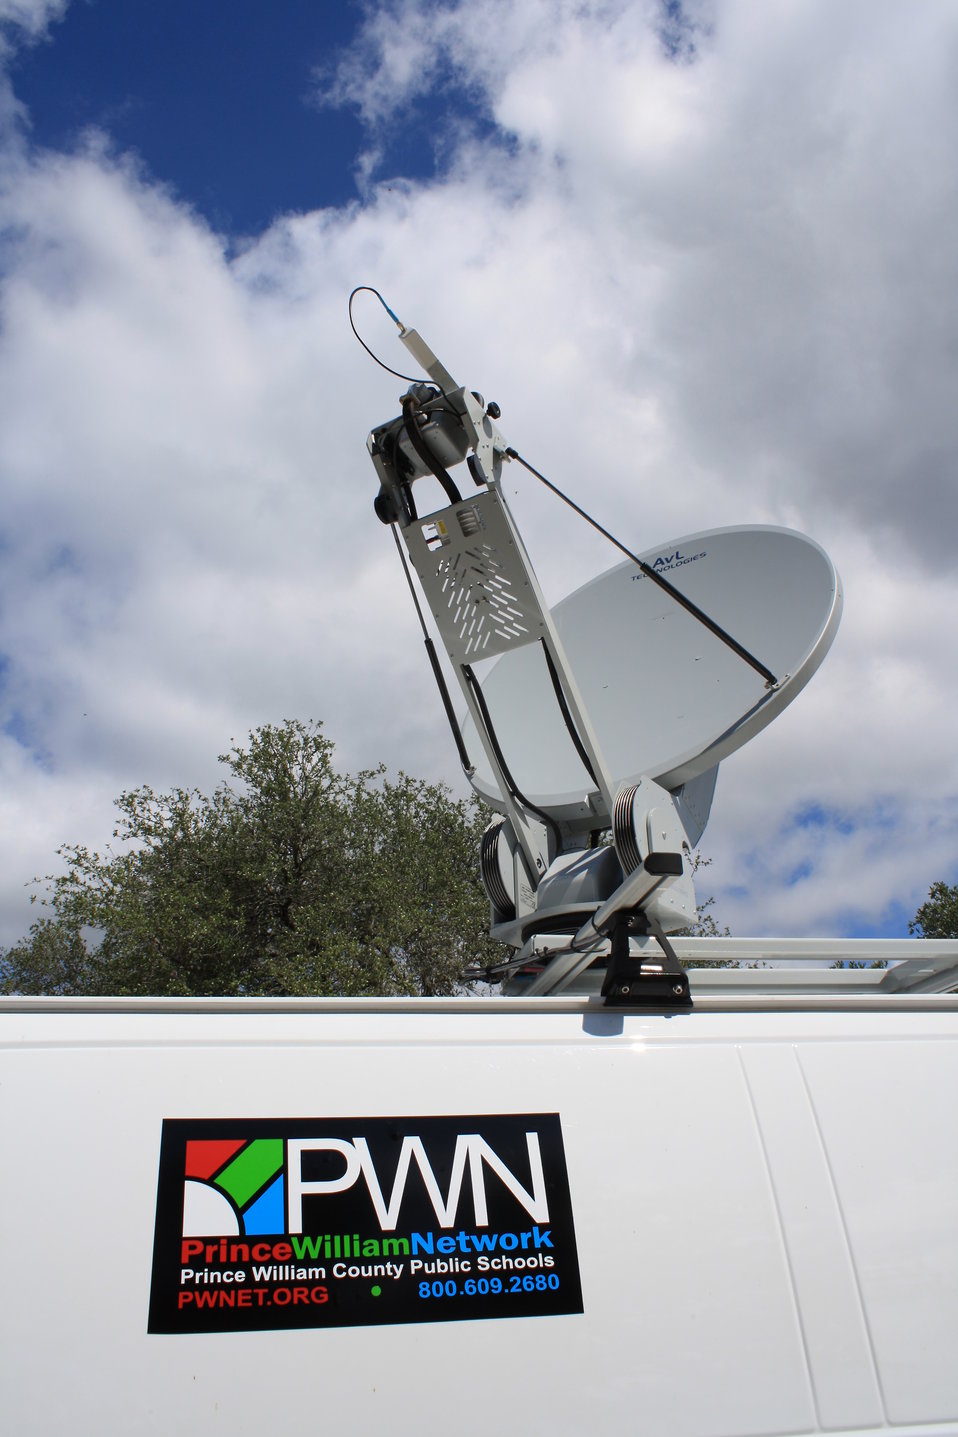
Prince William Network van and satellite uplink to broadcast live from Bracken Bat Cave